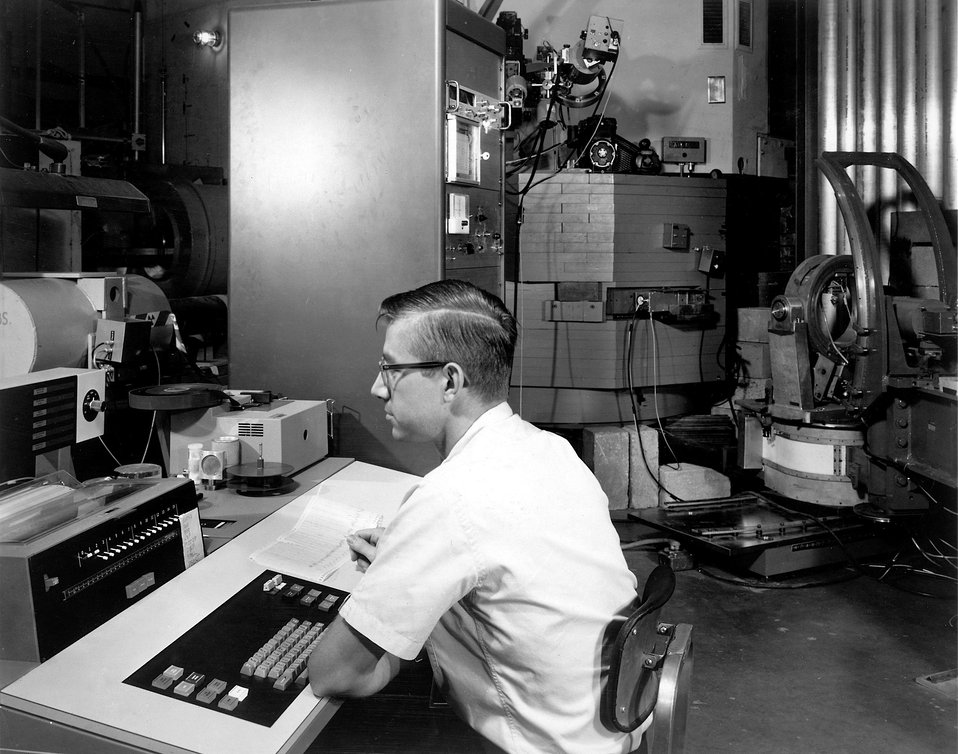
The ARCADE system developed at Argonne is being applied to five different areas of research for use in control of experiments and data. In this ARCADE is being used in diffraction experiments to determine crystal lattice structures.
c.1970